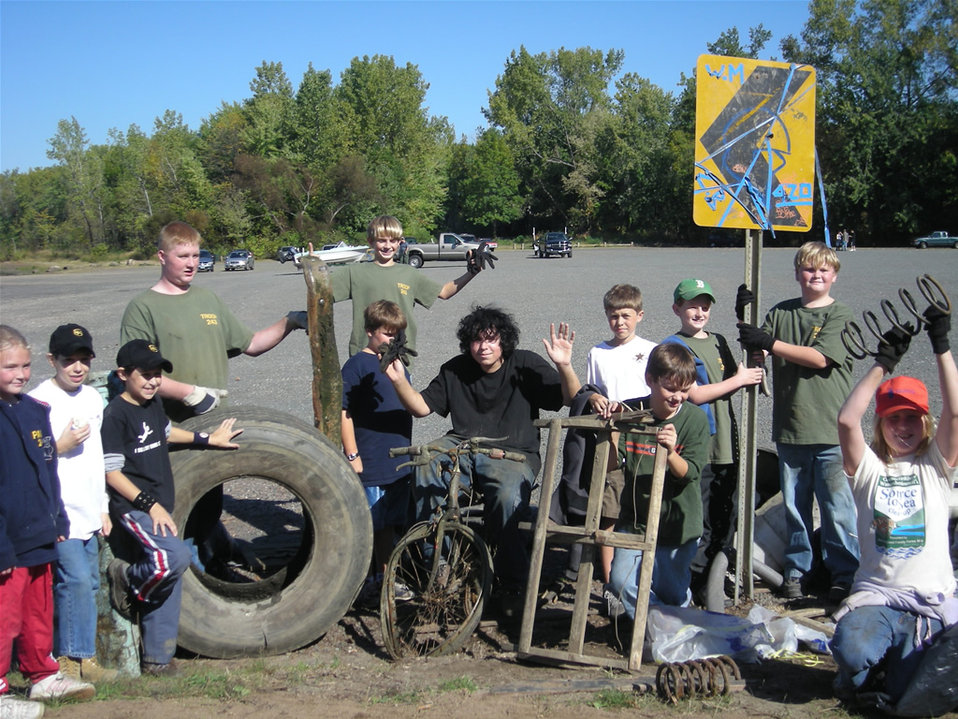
Uploaded by request of Melissa Bengtson

Taken in Wethersfield, CT

2007 CT River Watershed Council Source to Sea Cleanup, sponsored by the Metropolitan District (Hartford County Water Company). The cleanup was held at Wethersfield Cove, and over 50 volunteers of all ages came to clean up the Cove!